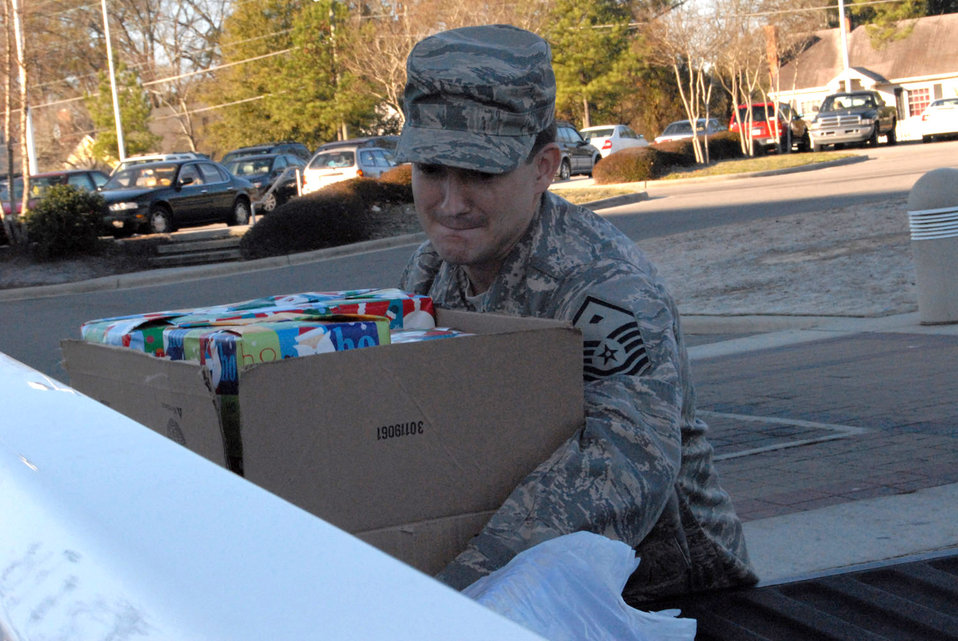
Pope Airmen make wishes come true for foster children

Master Sgt. Jerry Glover picks up a box of presents Dec. 18 to deliver to children in the local foster care system near Pope Air Force Base, N.C. Sergeant Glover is the 43rd Security Forces Squadron first sergeant.